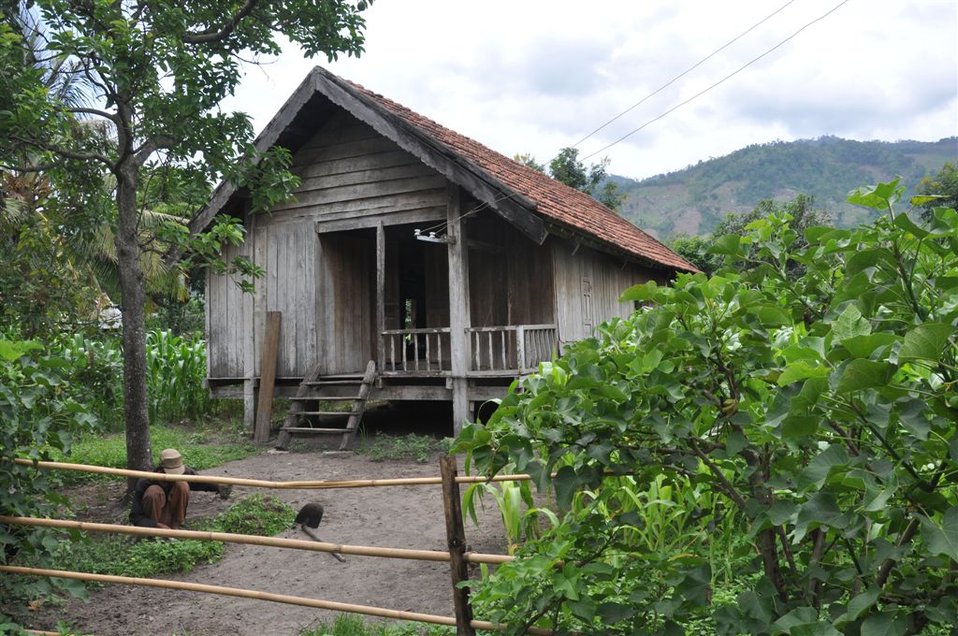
Local populations benefit from new cocoa crop techniques and market access.